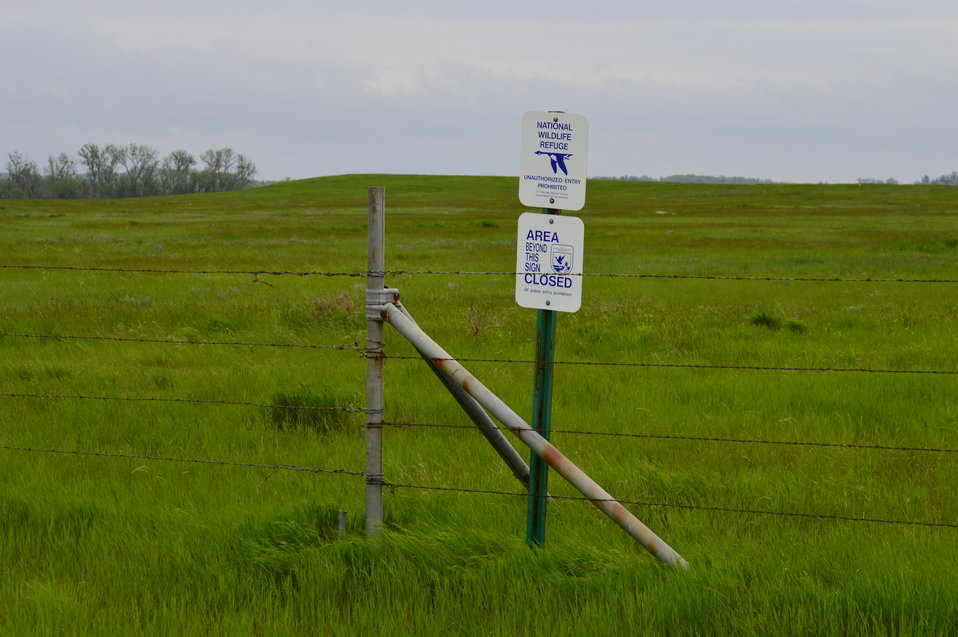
Boundary of the Refuge

Scenery and wildlife at Lake Ilo National Wildlife Refuge in North Dakota